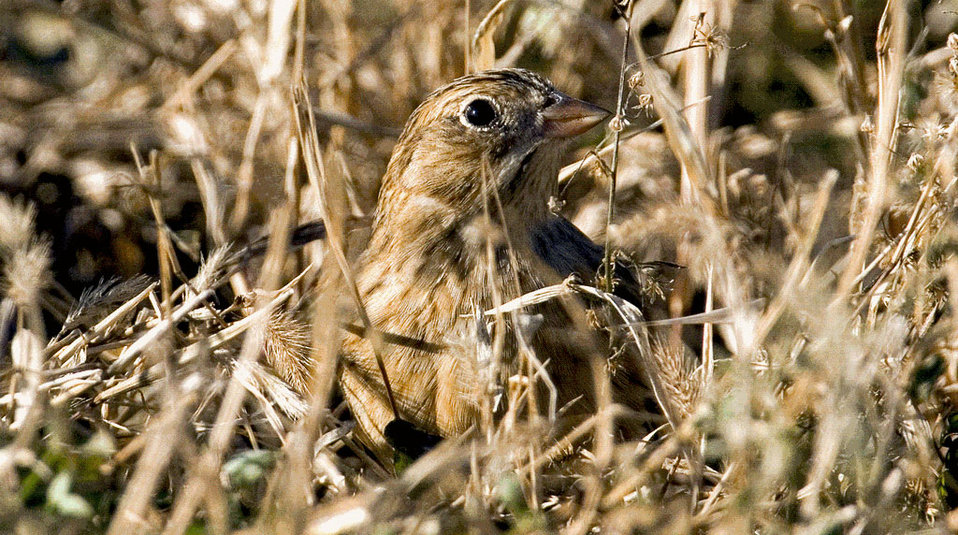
Migrating Longspur

Neal Smith National Wildlife Refuge, Iowa
March 29, 2012
Credit: Paul Roisen/USFWS

Smith's Longspurs have begun migrating through Neal Smith National Wildlife Refuge in central Iowa. Wildlife Biologist Karen Viste-Sparkman observed 30 of them on March 29, 2012. In previous years, they have been seen on the refuge during the first three weeks of April.

These birds nest in the tundra and winter in the southcentral United States. Most of the population passes through the Midwest region during migration, but they are easily overlooked. Smith's Longspurs spend most of their time on the ground, where their muted colors blend with the soil and dead vegetation. During migration they prefer short, sparse vegetation and at Neal Smith Refuge use burned areas of the tallgrass prairie. This is just one species of grassland bird that uses tallgrass prairie habitat on the refuge.